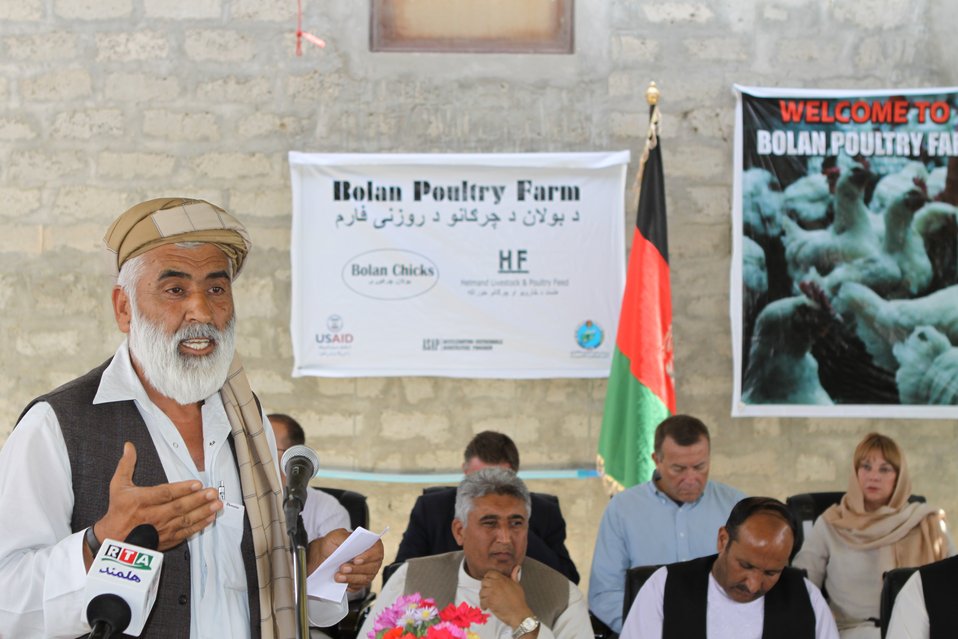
Bolan Poultry Farm